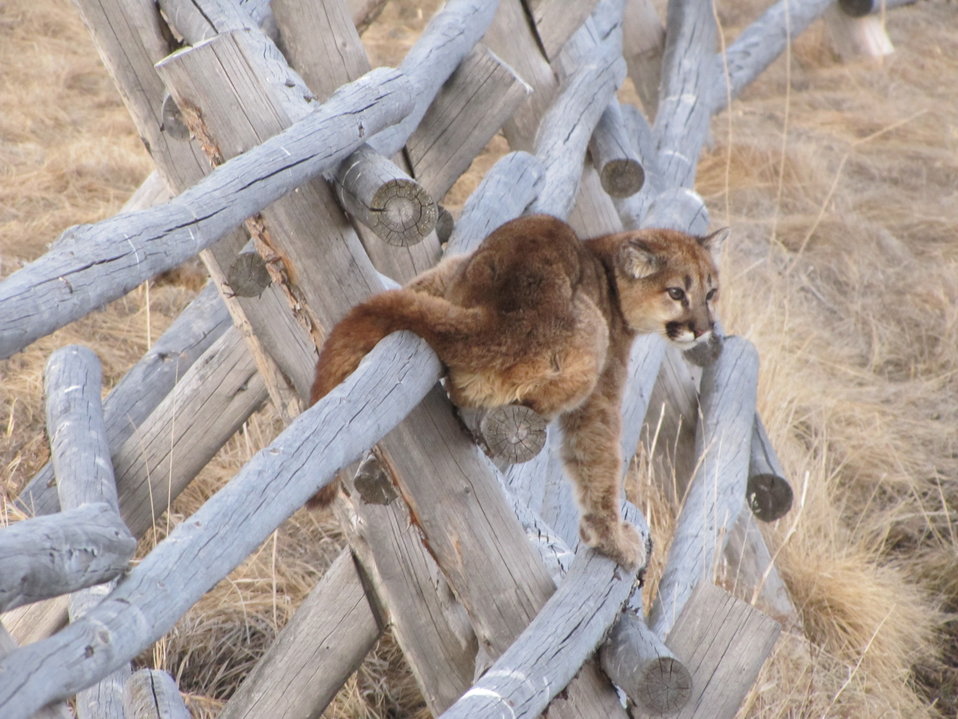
I Don't Like This Game Anymore

One in a series of seven photos:

The National Elk Refuge's Outdoor Recreation Planner witnessed a spectacular standoff between two juvenile mountain lions and five coyotes. The coyotes let the cats know they weren’t welcome in the area. The mountain lions sought safety on a buck and rail fence for over an hour while the coyotes lurked in the background.

One of the mountain lions makes it way down the fenceline and anticipates its next move.

The encounter ended with one of the mountain lions slowly making its way down the fence, occasionally dropping to the ground where it was met by lunges and yips by the coyotes. The mountain lion responded with hisses and yowls. Eventually, it ran across the creek on the fence and took off running with the five coyotes in pursuit. The second mountain lion was still hunkered down in the grass under the fence when the Outdoor Recreation Planner called it a night.

Credit: Lori Iverson / USFWS

This photo series has gone viral! Join the discussion on our Facebook page: www.facebook.com/photo.php?fbid=595246397154972&set=a...